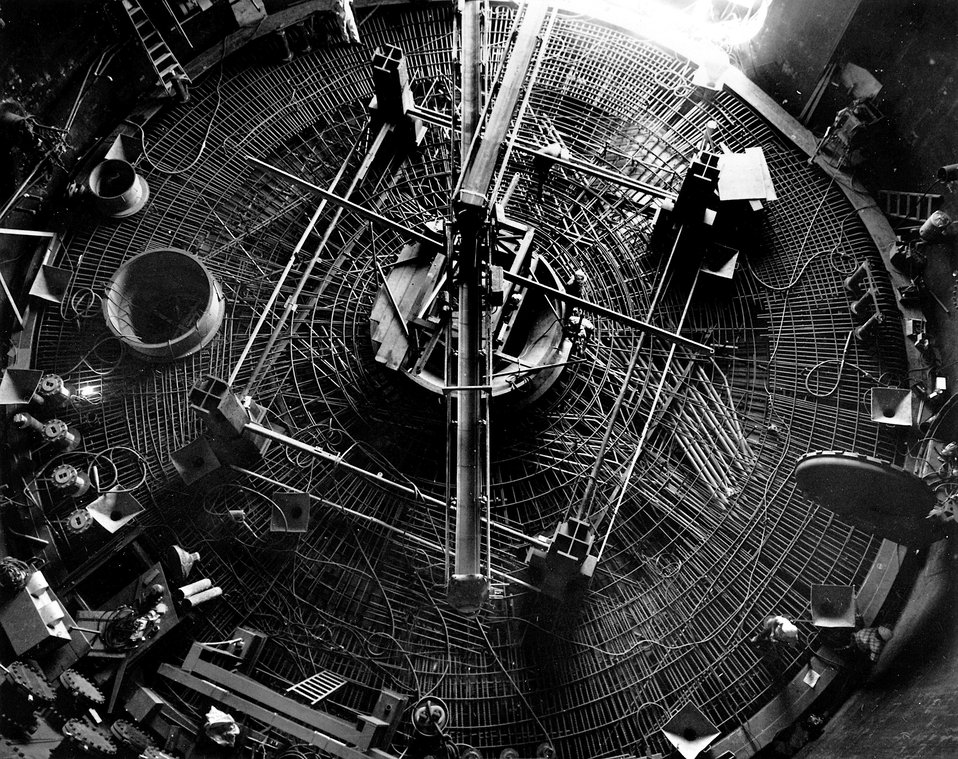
A workman inspected the floor of the Loss of Fluid Test (LOFT) facility at the National Reactor Testing Station, Idaho before the maze of instrument lead conduit and reinforcing steel was covered with two feet of concrete in July 1971. Circa 1972.